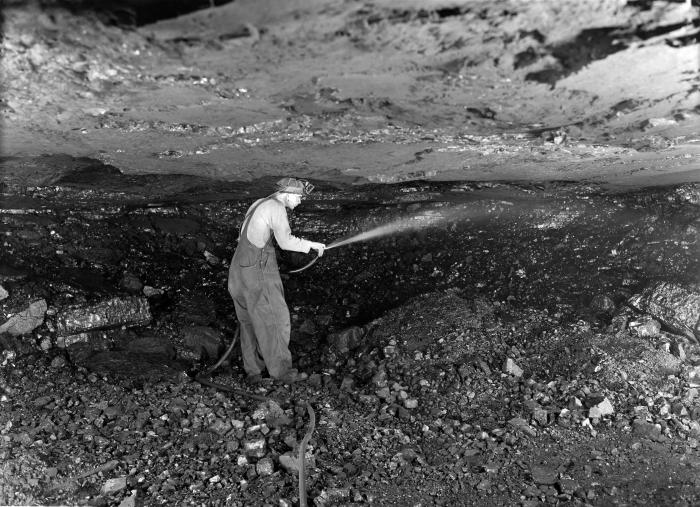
From the 1950s or 1960s, this historic image was provided by the Center for Disease Control's (CDC), National Institute for Occupational Safety and Health (NIOSH), The photograph depicted a coal miner spraying water against the walls of a mine shaft. In this way, freshly excatvated regions of the mine, which were laden with ore dust, when wet, would minimize the tendancy of the dust to become airborne, thereby, keeping the confined air particulates to a minimum. Note that this miner was not wearing any protective facial breathing gear such as a filtered mask. In the small confines of a mine, airborne coal dust can emanate from almost anywhere in the shaft network, which made miners predisposed to the long-term negative health effects of this profession such as 'black lung disease', or 'coal-workers' pneumoconiosis' (CWP).